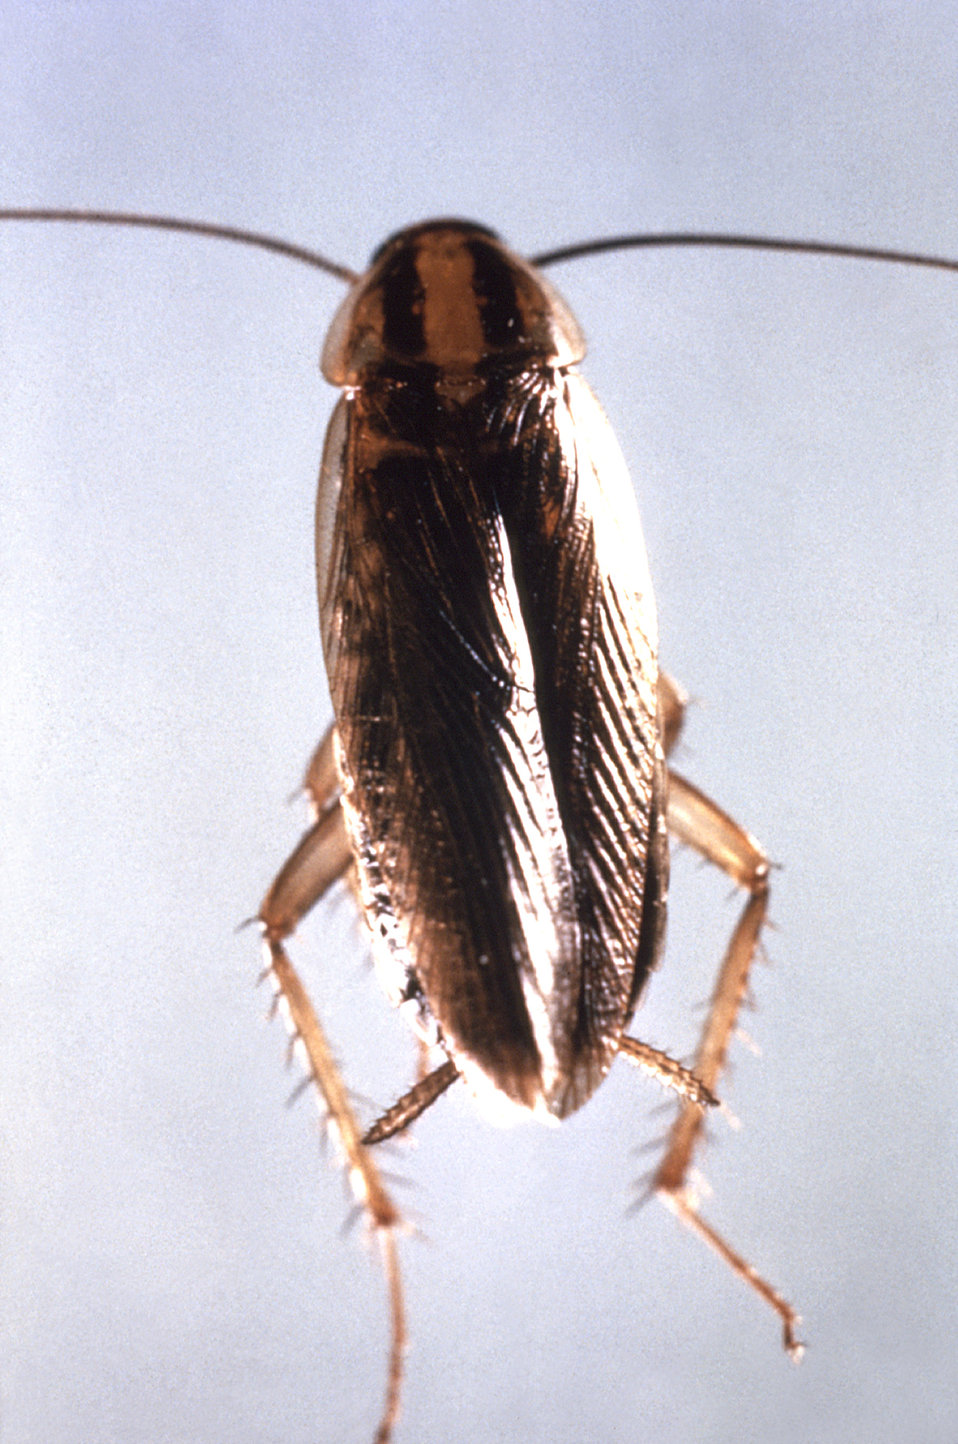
This is a dorsal view of a German cockroach, Blatella germanica, a vector for a number of pathogenic organisms.